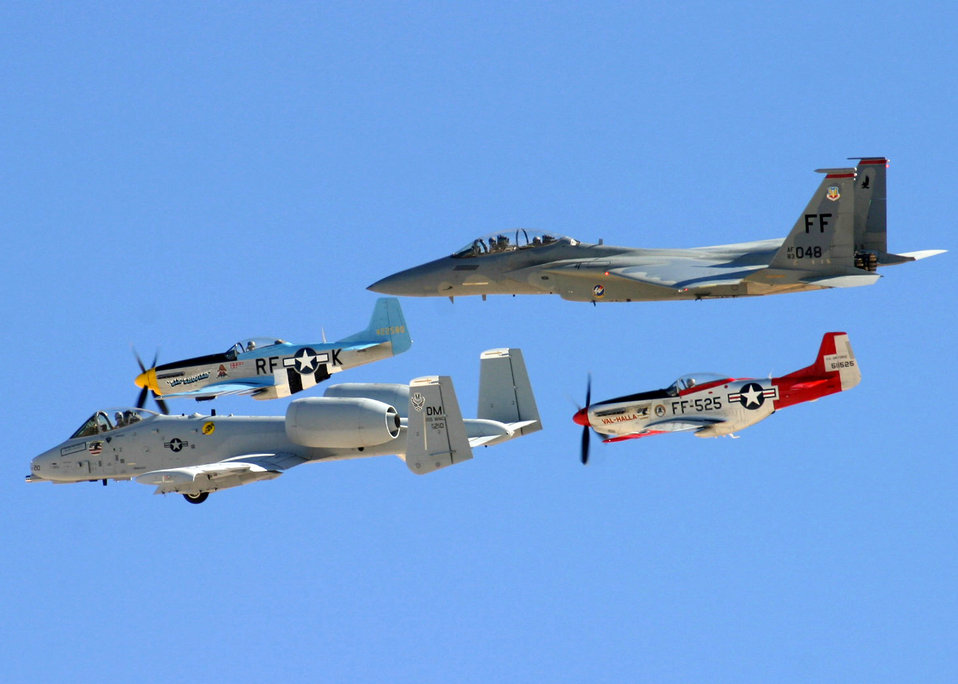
Aircraft 'generations'

NELLIS AIR FORCE BASE, Nev. -- Two P-51 Mustangs, an A-10 Thunderbolt II and an F-15D Eagle team up during an air show here Nov. 13 and 14.